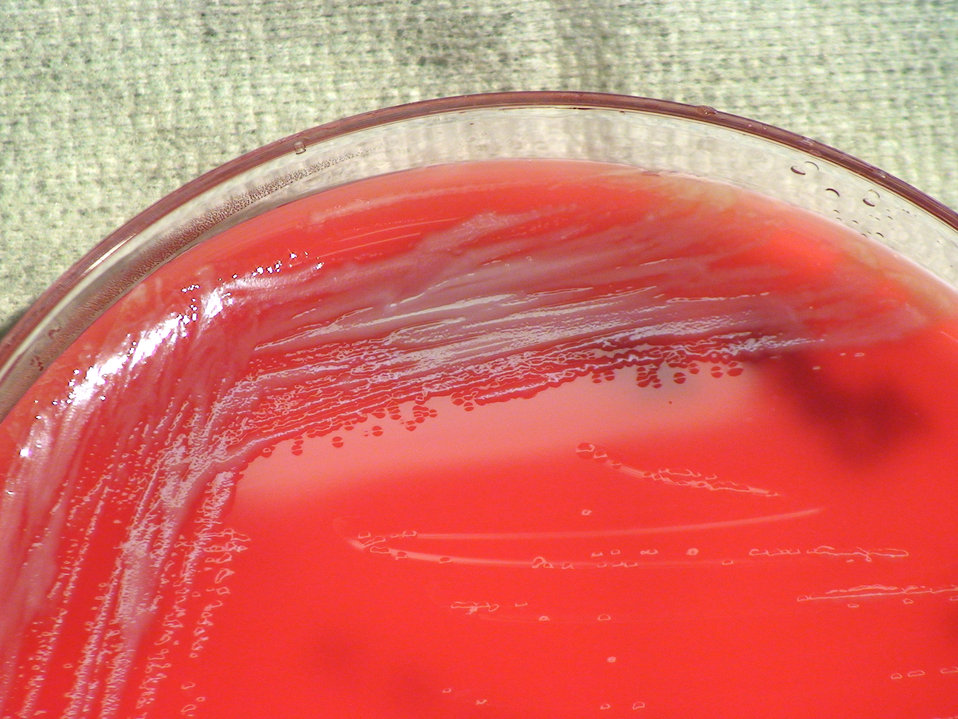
A closer view of PHIL 12423, this photograph depicts the colonial morphology displayed by Gram-negative Burkholderia thailandensis bacteria, which was grown on a medium of sheep's blood agar (SBA), for a 24 hour time period, at a temperature of 37�C. See PHIL 12424, for a closer view of these bacterial colonies. Also, see both PHIL 12401 and 12402, for views of this bacterial specie, grown on the same medium, at the same temperature, however, for a longer period of time (48hr). PHIL 12408 and 12409 also display B. thailandensis colonial growth on the same medium, but at a higher temperature (42�C), and at twice the time period (48hr). Finally, PHIL 12431 and 12432 display this specie's bacterial growth, again on SBA, and for the same amount of time (24hr), but at a greater temperature (42�C).